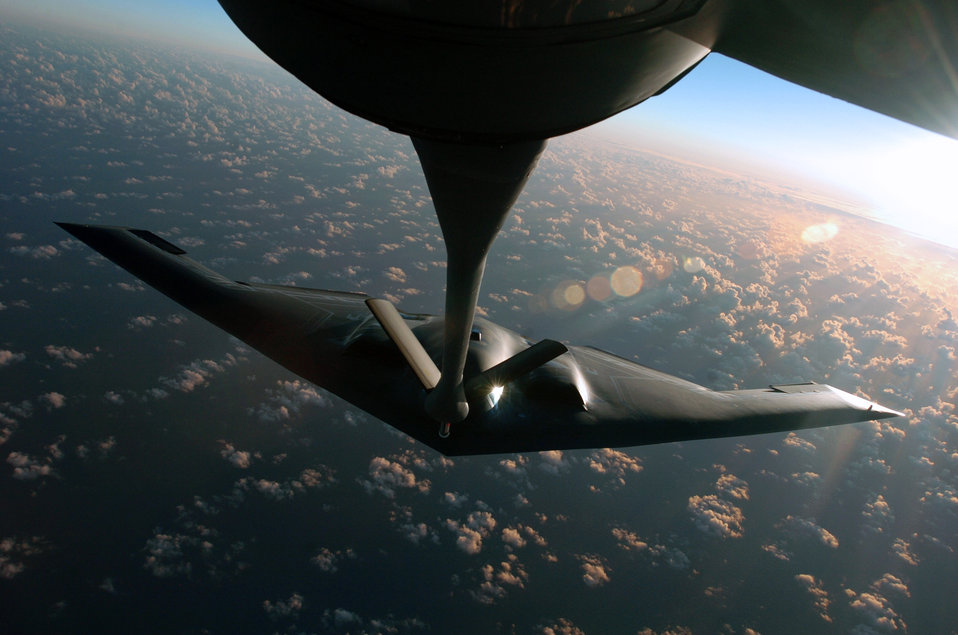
Fuel the Spirit

OVER THE PACIFIC OCEAN -- A B-2 Spirit bomber prepares to refuel from a KC-135 Stratotanker during a deployment to Andersen Air Force Base, Guam. The bomber deployed as part of a rotation that has provided U.S. Pacific Command officials a continuous bomber presence in the Asia-Pacific region, enhancing regional security and the U.S. commitment to the Western Pacific. The Spirit is from the 509th Bomb Wing at Whiteman AFB, Mo. The Stratotanker is assigned to the Illinois Air National Guard's 126th Air Refueling Wing at Scott AFB.